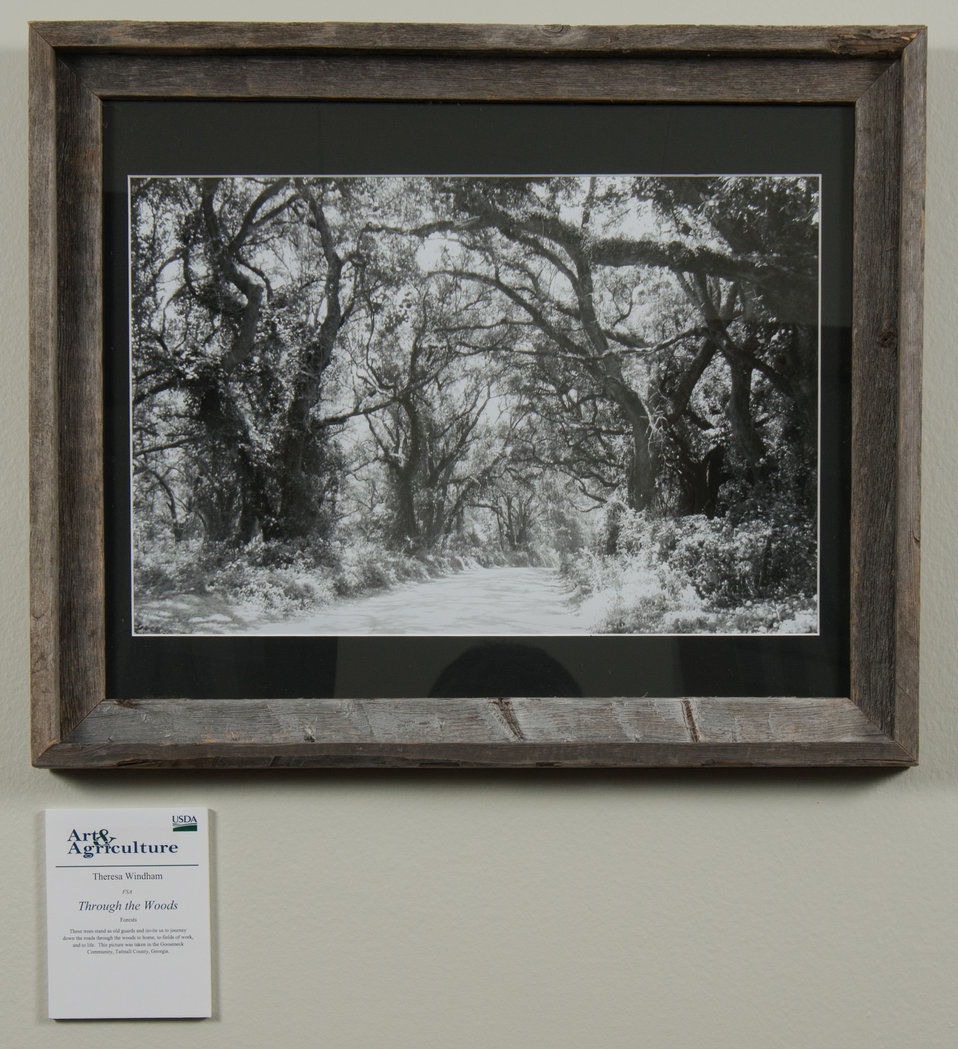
Online Viewer's Choice entries of the 2013 Art & Agriculture, Tuesday, July 9, 2013, in the South Building, Washington, D.C. Themes were expressed by employees from across the department and the contest was open to full-time and part-time USDA employees. Winning artwork will be displayed till the end of the year. U.S. Artistic expression is a creative outlet that is vital for an individual to grow and develop.